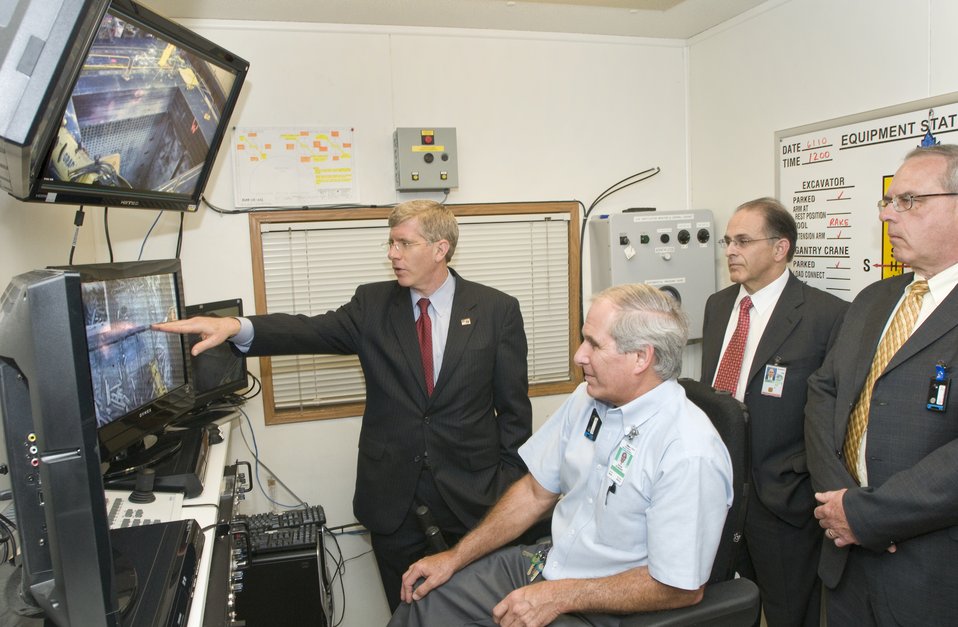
Brookhaven Reactor Visit

On June 1, Doug Pocze and John Malleck of the U.S. Environmental Protection Agency visited Brookhaven Lab to join the celebration marking a major milestone in decommissioning of the BGRR—the safe and successful removal of the graphite pile. This phase, which removed 60,000 activated graphite blocks weighing a total of 700 tons, began in early February and was completed in May. It represents the most difficult part of the decommissioning process.

DOE Deputy Secretary Daniel Poneman and DOE Environmental Management Recovery Act Program Director Cynthia Anderson also were present for the celebration. The visitors toured the BGRR to see the remotely operated equipment and controls used for graphite removal.